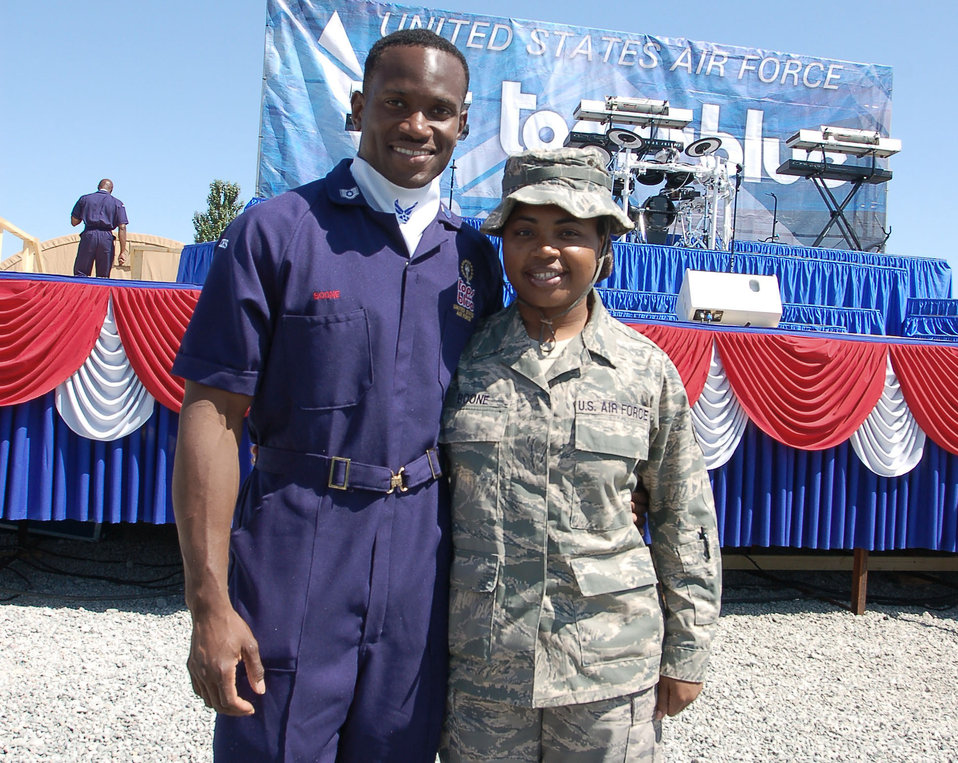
Airman reunites with Tops In Blue husband in Kyrgyzstan

Tech. Sgt. Patrika Boone reunites with her husband Staff Sgt. Wendell Boone Jr., a vocalist with Tops In Blue, during the Air Force Expeditionary Entertainers' visit to the Transit Center July 10 at Manas Air Base, Kyrgyzstan. During the visit, Tops In Blue performed two shows at Manas AB. Sergeant Boone, assigned to the 376th Expeditionary Logistics Readiness Squadron here, is deployed from Robins Air Force Base, Ga., while her husband is an air transportation apprentice with the 69th Aerial Port Squadron at Andrews AFB, Md.